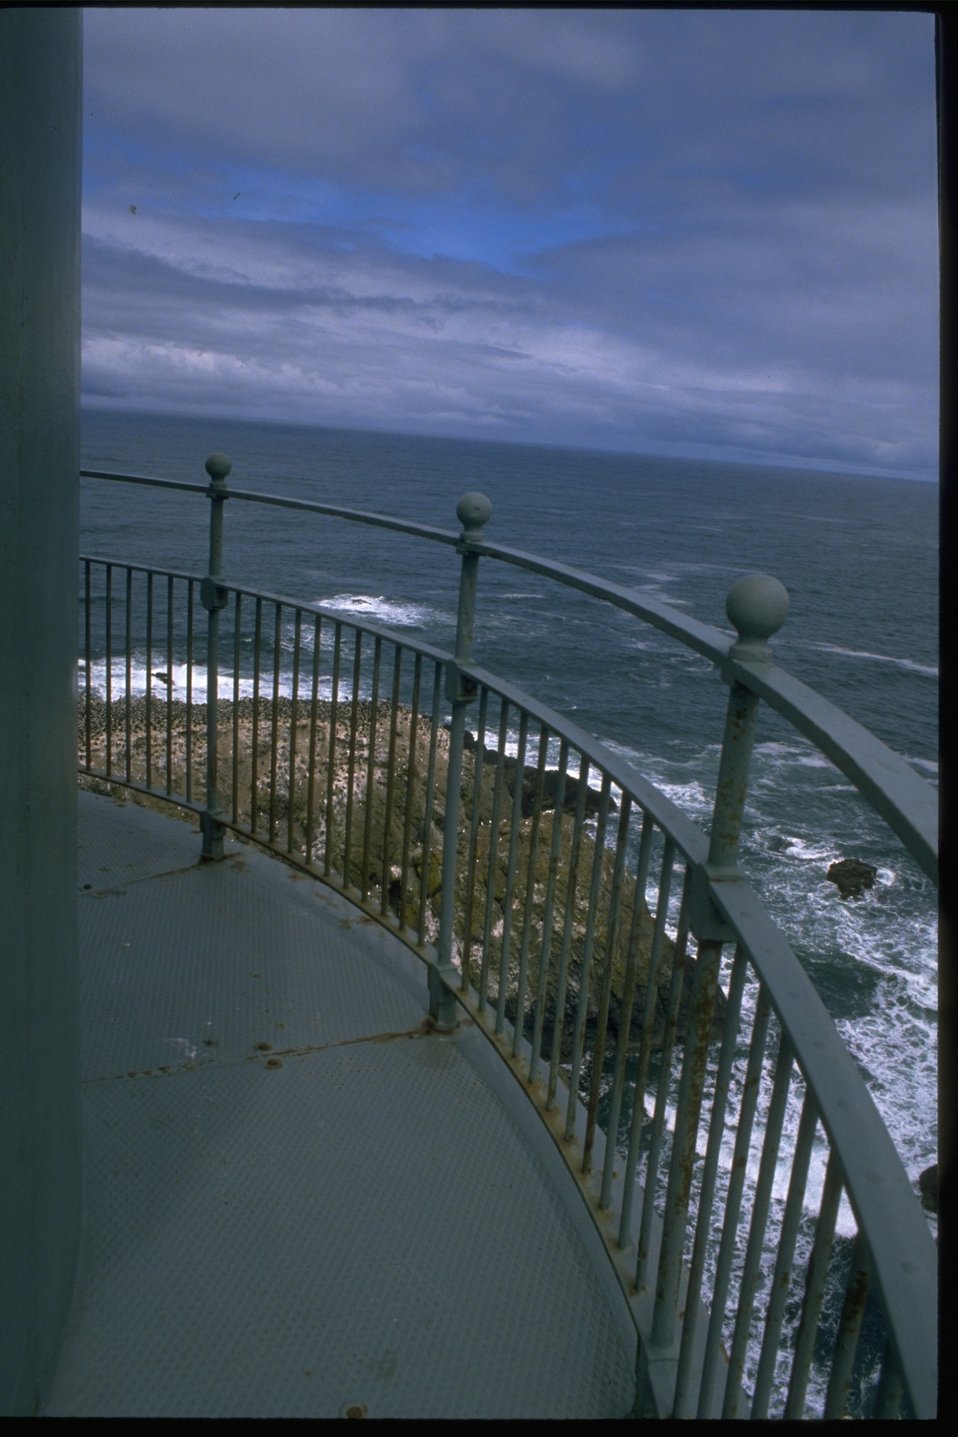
Catwalk area on the exterior of the Yaquina Head lighthouse watchroom.